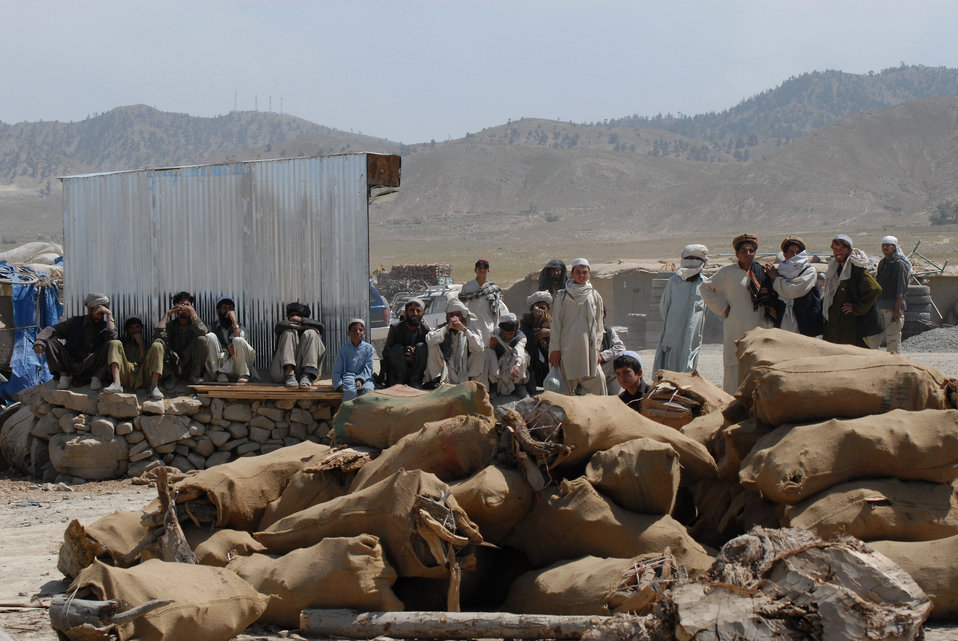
'On the Road' in Paktya Province